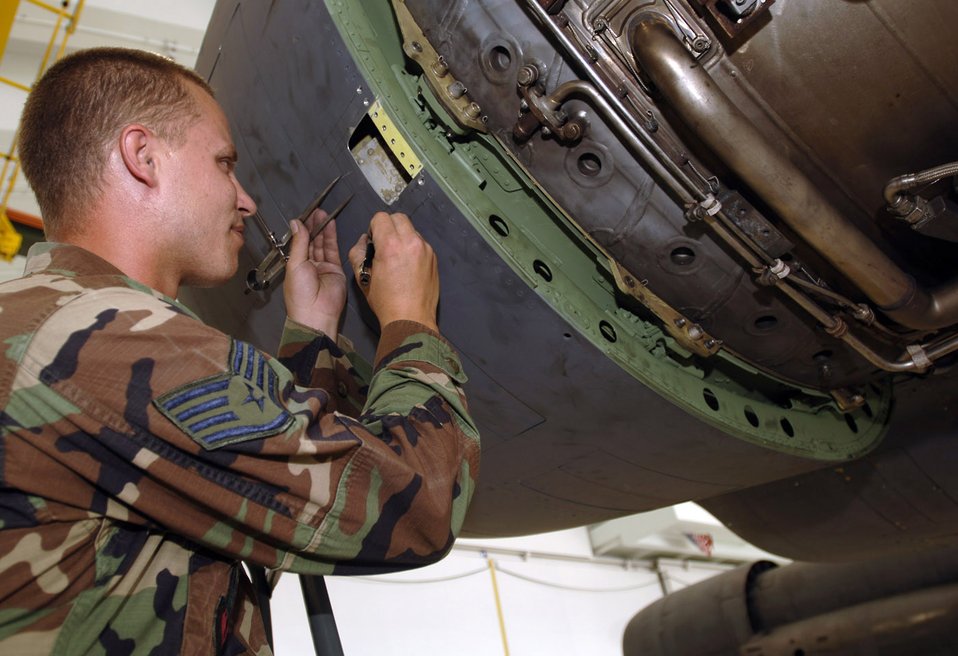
Phase maintenance

ANDERSEN AIR FORCE BASE, Guam (AFPN) -- Staff Sgt. Matthew Foley works to repair a damaged engine cover on a B-52 Stratofortress Jan. 31. The B-52s return to Andersen from a forward operating location after flying 300 hours.